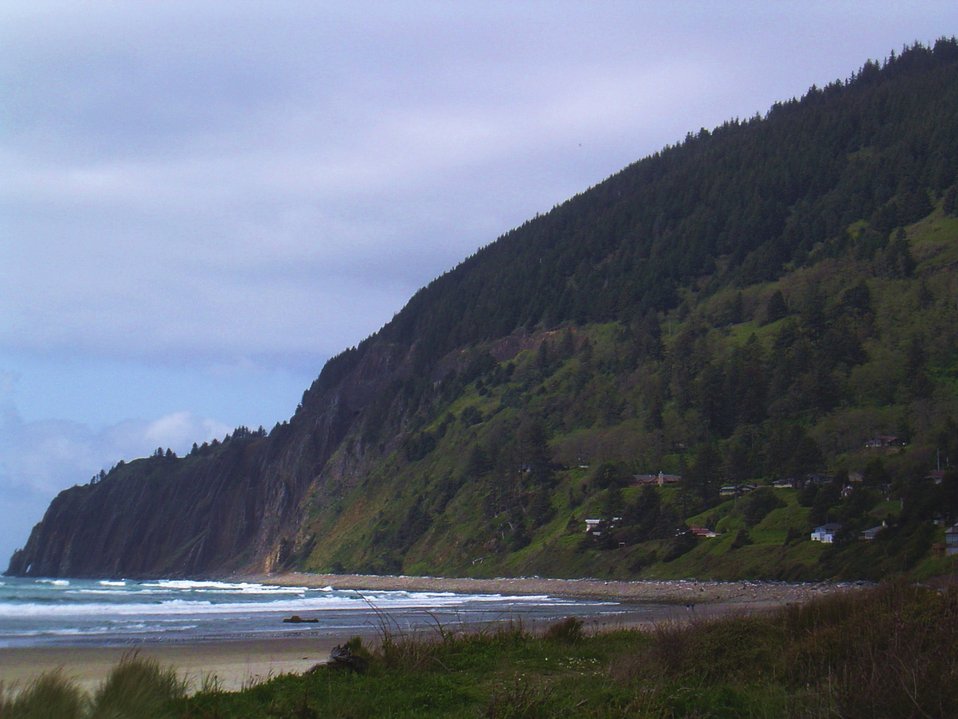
Headland along the northern Oregon coast.